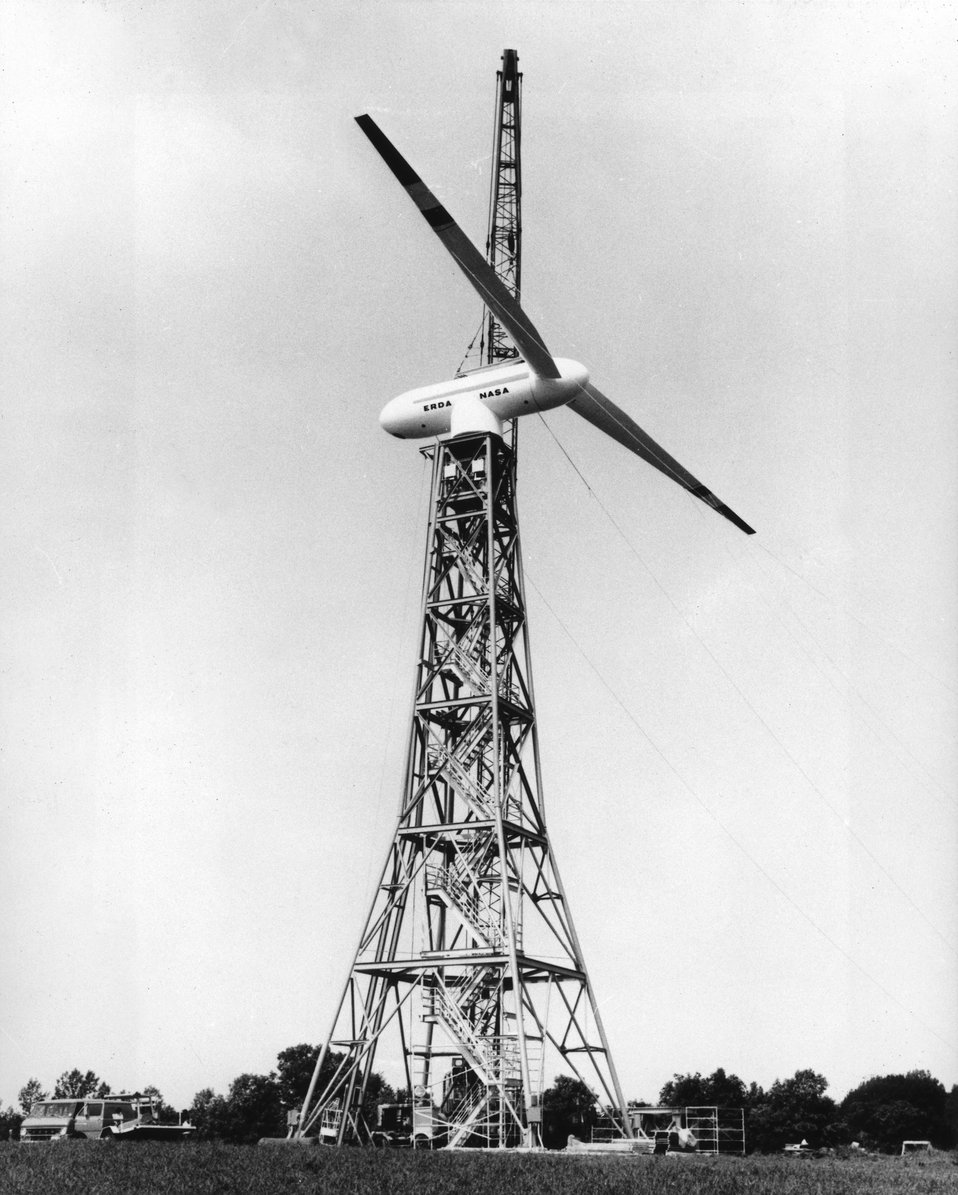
A 125-foot-tall windmill has been developed for the U.S. Department of Energy (DOE) by NASA's Lewis Research Center in Cleveland, Ohio. c. 1975